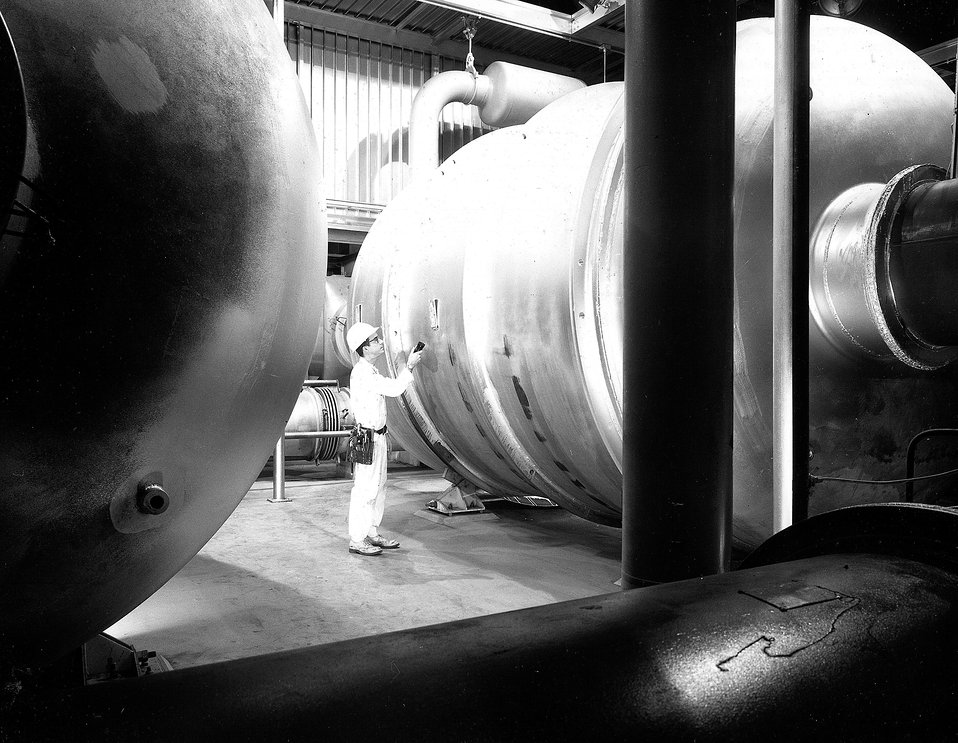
Large size compressors and converters are shown at the Energy Research and Development Administration's Oak Ridge (Tenn.) Gaseous Diffusion Plant. Circa 1972.